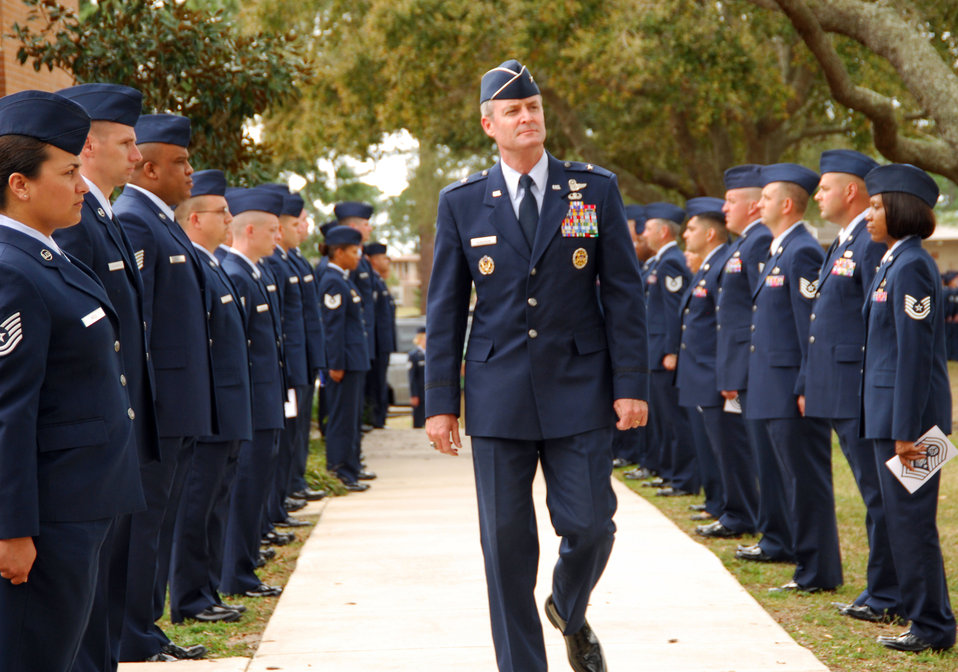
Airey memorial service celebrates life of AF hero

Brig. Gen. Darryl Roberson, 325th Fighter Wing commander, makes his way to the entrance of the Tyndall Air Force Base Chapel March 16 where a memorial service for the first Chief Master Sgt. of the Air Force, Paul W. Airey, was held. He is flanked on either side by formations of Airmen from the Tyndall Paul W. Airey NCO Academy. Chief Airey spent 27 years in the Air Force, obtaining the rank of Chief Master Sgt. of the Air Force April 3, 1967. He retired Aug. 1, 1970 and died March 11, 2009. He was 85 years old.